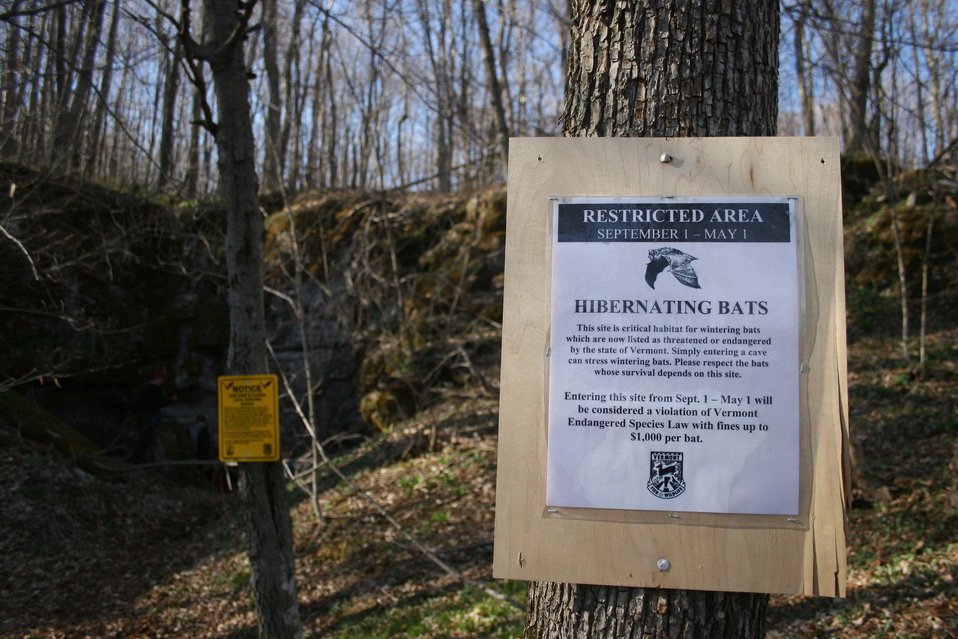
Cave closed signs

Mt. Aeolus cave is protected by a bat-friendly gate, but signs warn visitors that disturbing hibernating bats may result in a fine.